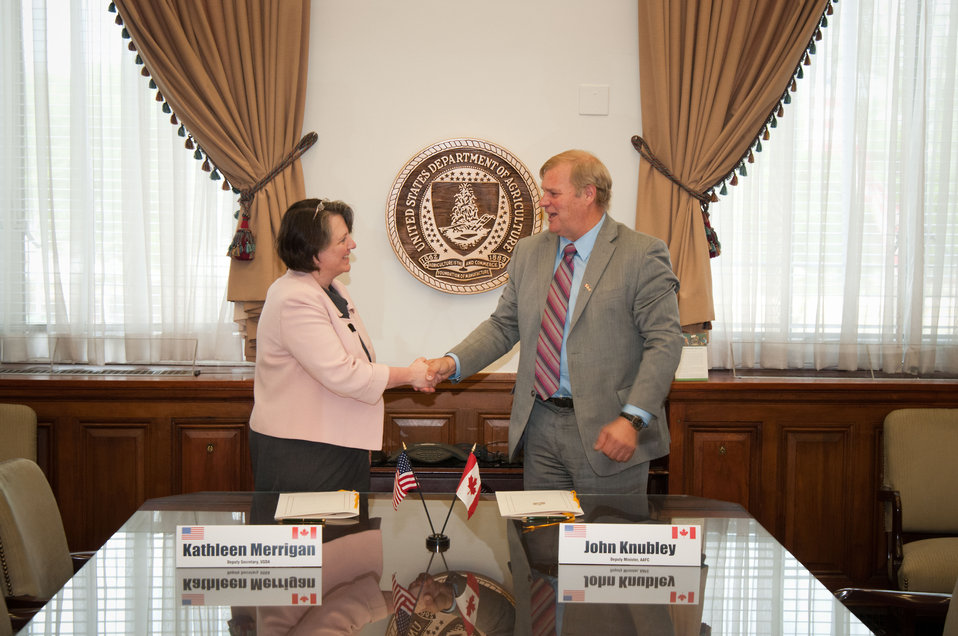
Agriculture Deputy Secretary, Dr. Kathleen Merrigan (left), United States Department of Agriculture and John Knubely (right), Deputy Minister, Canada Agriculture and Agri-Food sign a Memorandum of Understanding verifying enhanced collaboration in Agroforestry between the two nations at the United States Department of Agriculture, on Tuesday, April 17, 2012 in Washington, DC.